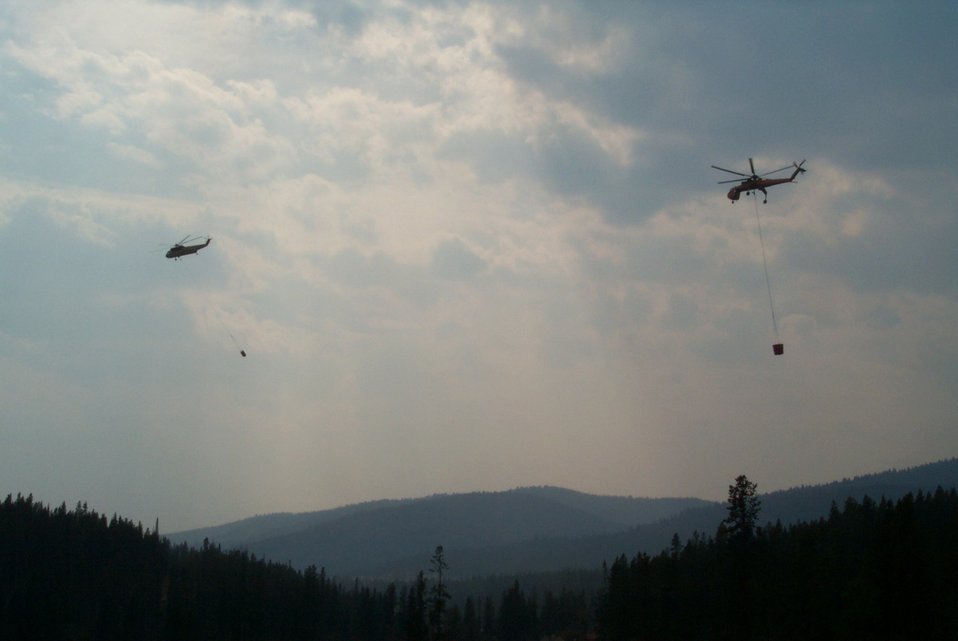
Helicopter drops Fire Clearwater Fire Salmon Field Office USRD Upper Snake River District